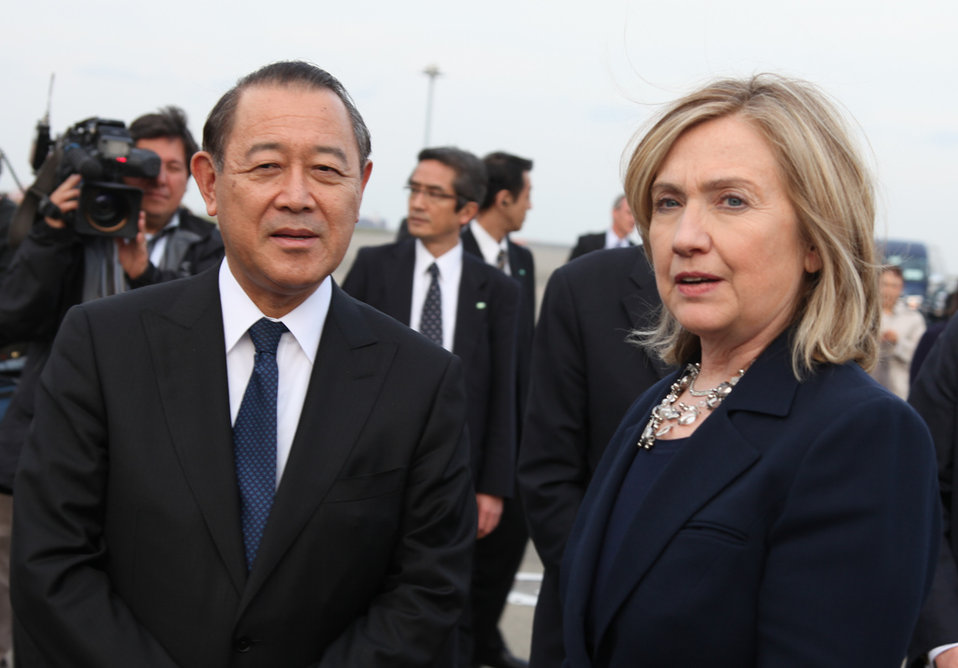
Secretary Clinton Speaks With Japanese Ambassador Fujisaki

U.S. Secretary of State Hillary Rodham Clinton speaks with Japanese Ambassador to the United States Ichiro Fujisaki at Haneda Airport as she concludes her visit to Tokyo, Japan, on April 17, 2011.